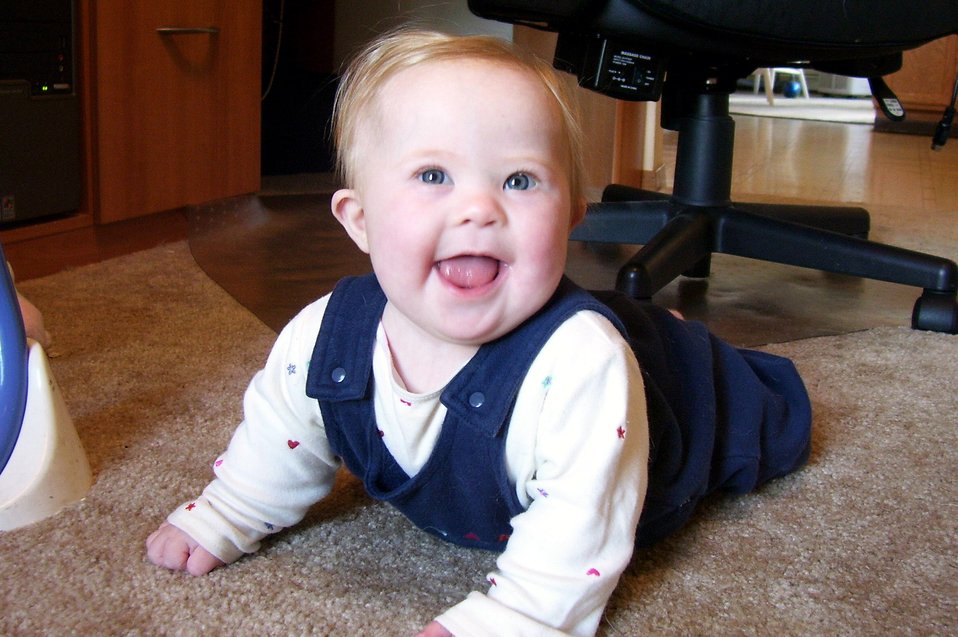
AF family featured in Times Square video

Eight-month old Kalliegh Young smiles for the camera at home at Eielson Air Force Base, Alaska. Kalleigh will be one of 215 people with Down syndrome who will be featured on the big screen in Time Square Sept. 30. The video will kick off the National Down Syndrome Society's National Down Syndrome Awareness Month. Kalleigh is the daughter of Judy and Tech. Sgt. Daniel Young. Sergeant Young is a member of the 354th Maintenance Squadron on Eielson AFB.